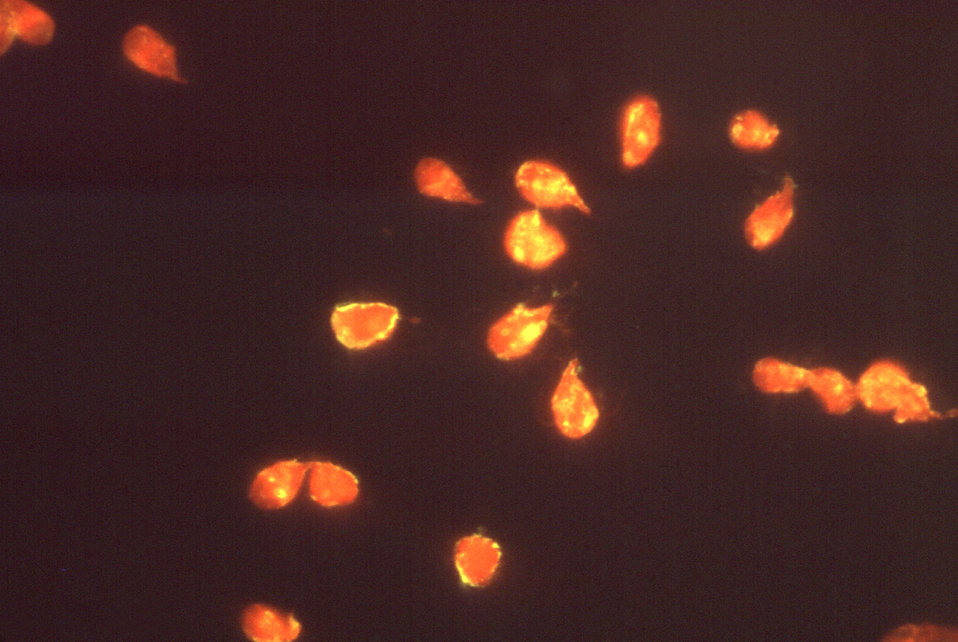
This photomicrograph depicts Giardia lamblia parasites using an indirect immunofluorescence test for giardiasis.